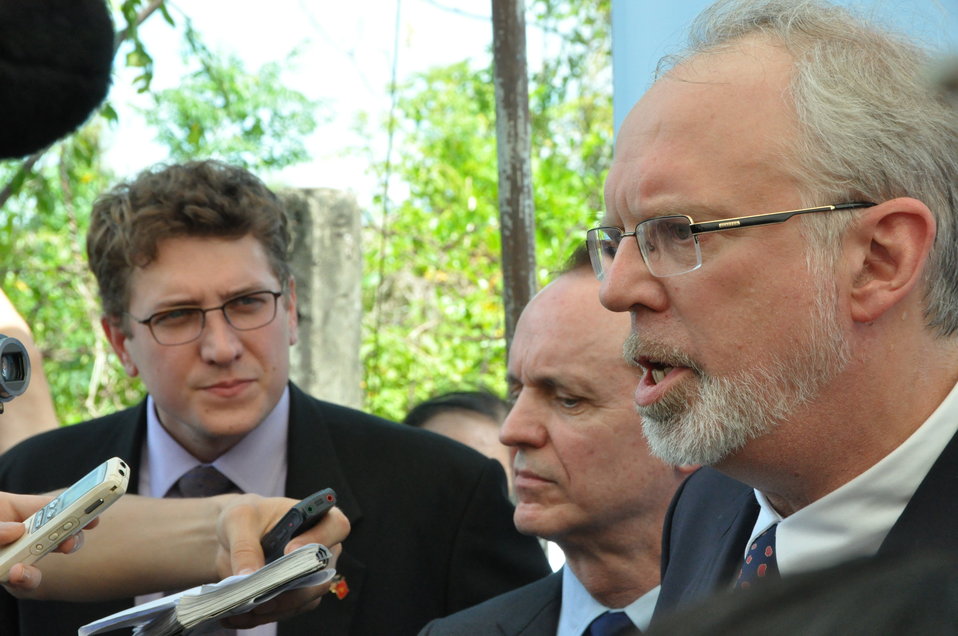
U.S. Ambassador David B. Shear meets the press at the Environmental Remediation of Dioxin Contamination at Danang Airport Project Launch

Danang, August 9, 2012